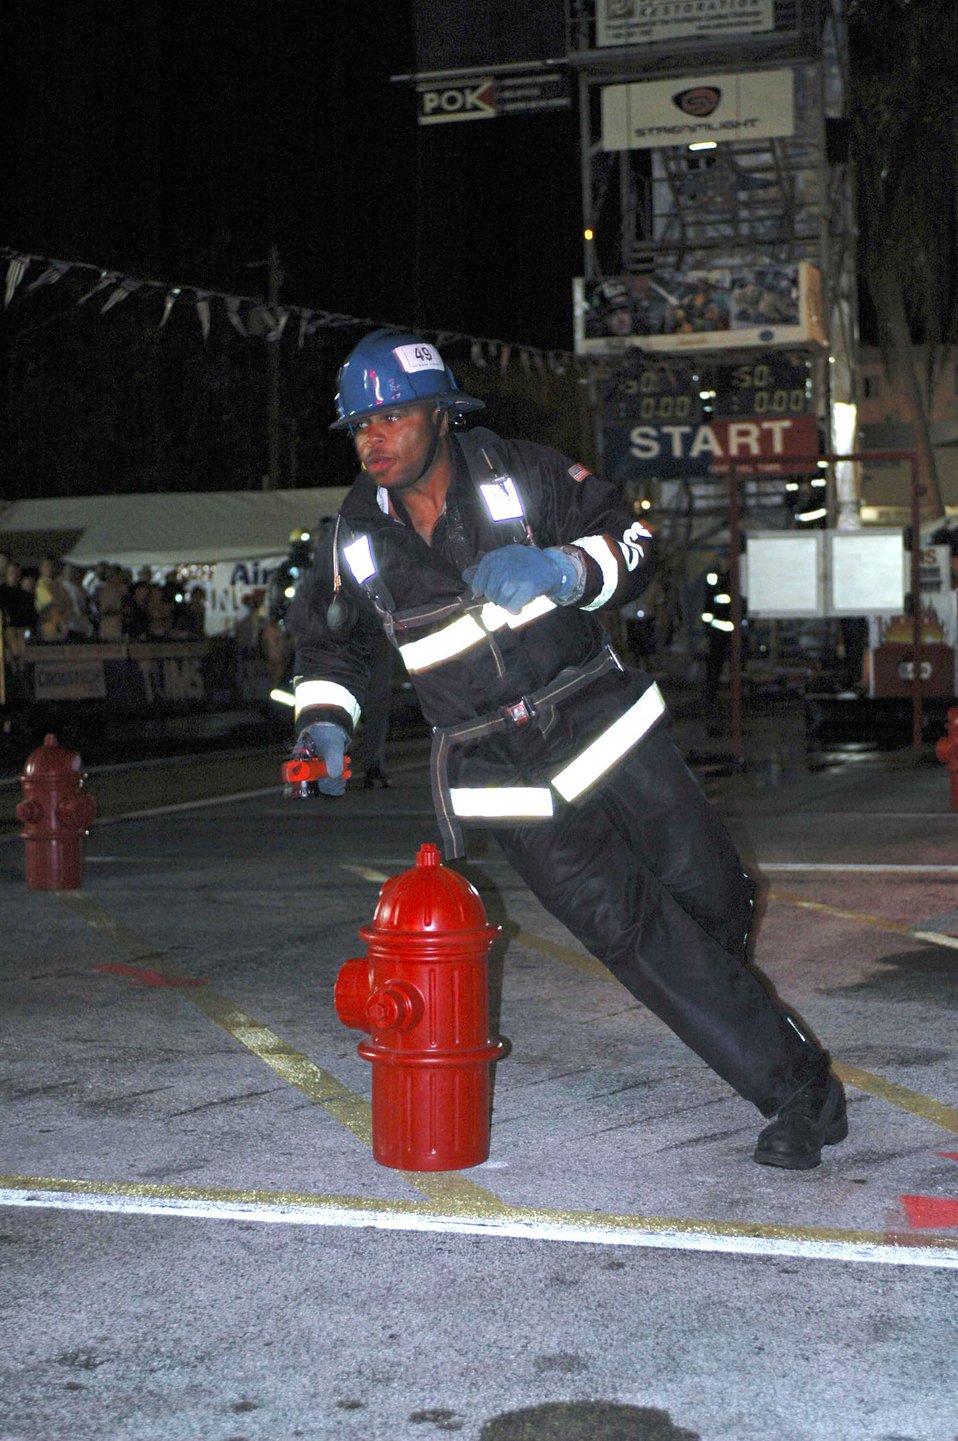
World-class firefighters

DEERFIELD BEACH, Fla. (AFPN) -- Senior Airman Jeff McClendon runs the World Firefighter Combat Challenge stream-light relay here. Airman McClendon is with the 60th Civil Engineer Squadron at Travis Air Force Base, Calif.